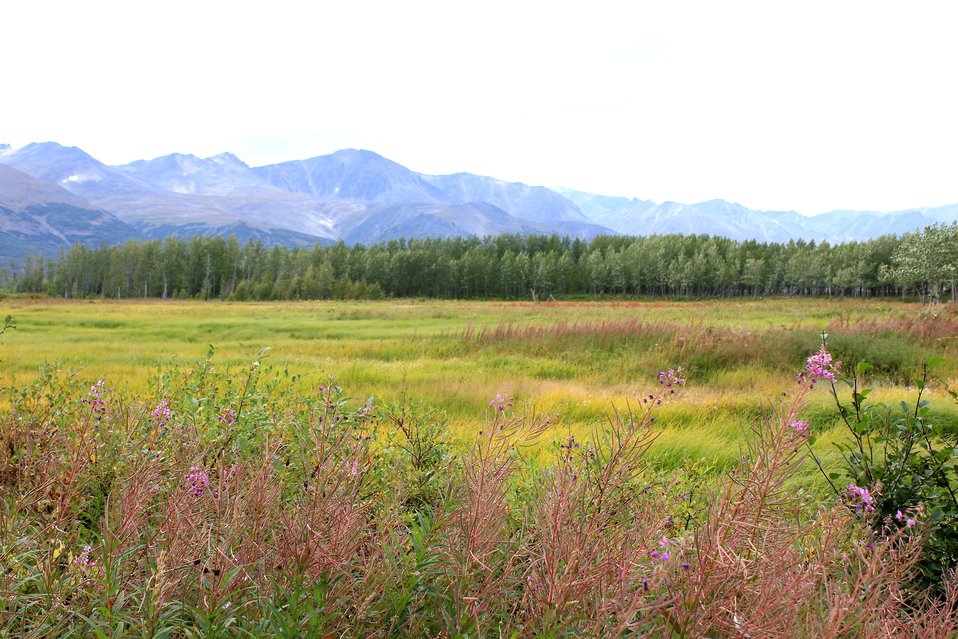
Meadow near Pilgrim Hot Springs with fireweed in foreground.